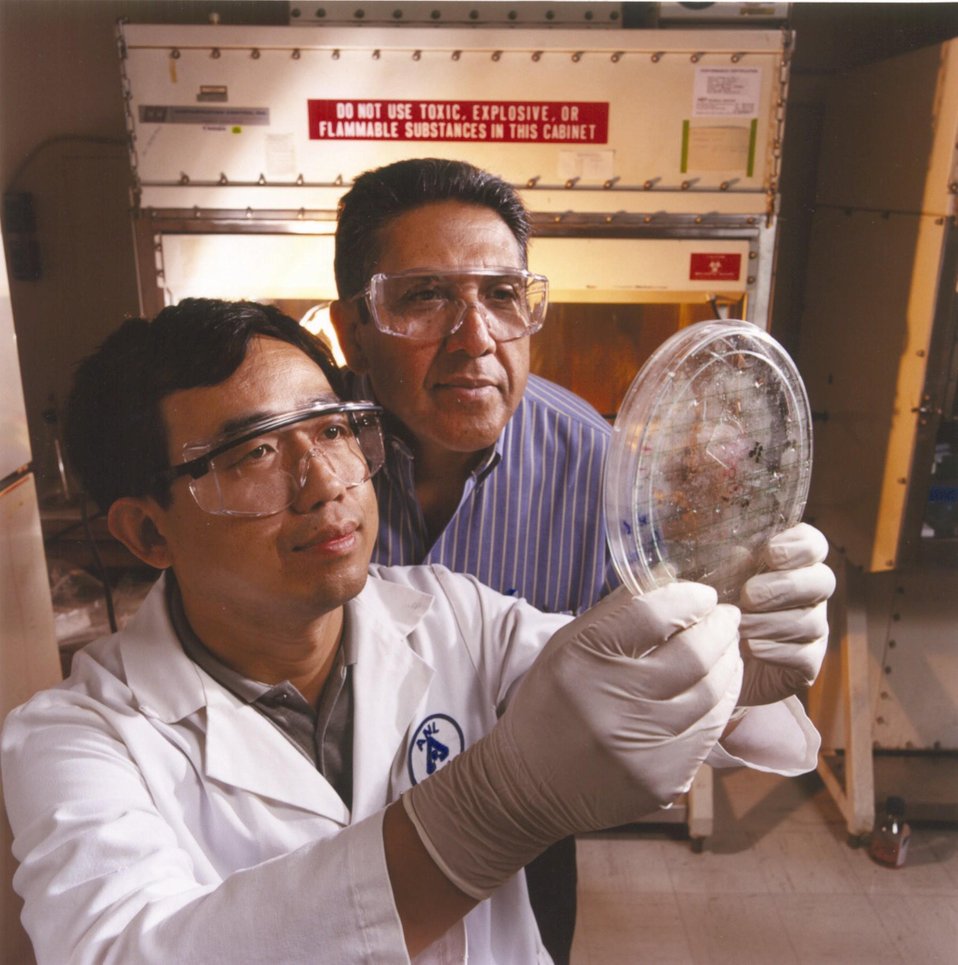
ARGONNE BIOLOGISTS FINDING A NEW SOURCE OF STEM CELLS.

PLURIPOTENT STEM CELLS, PREVIOUSLY BELIEVED TO BE FOUND ONLY IN EMBRYONIC CELLS AND BONE MARROW, WHICH IS DIFFICULT TO COLLECT, MAY SOON BE PLENTIFUL AND EASY TO HARVEST FROM THE HUMAN BLOODSTREAM. STEM CELLS ARE CALLED PLURIPOTENT BECAUSE THEY CAN MORPH INTO MANY SPECIFIC BODY TISSUE CELLS. SCIENTISTS NEED THESE CELLS TO STUDY AND TREAT DISEASES WHICH INCLUDE CANCER, ALZHEIMER'S, SPINAL CORD INJURIES, PARKINSON'S, HEART DISEASE AND STROKE.